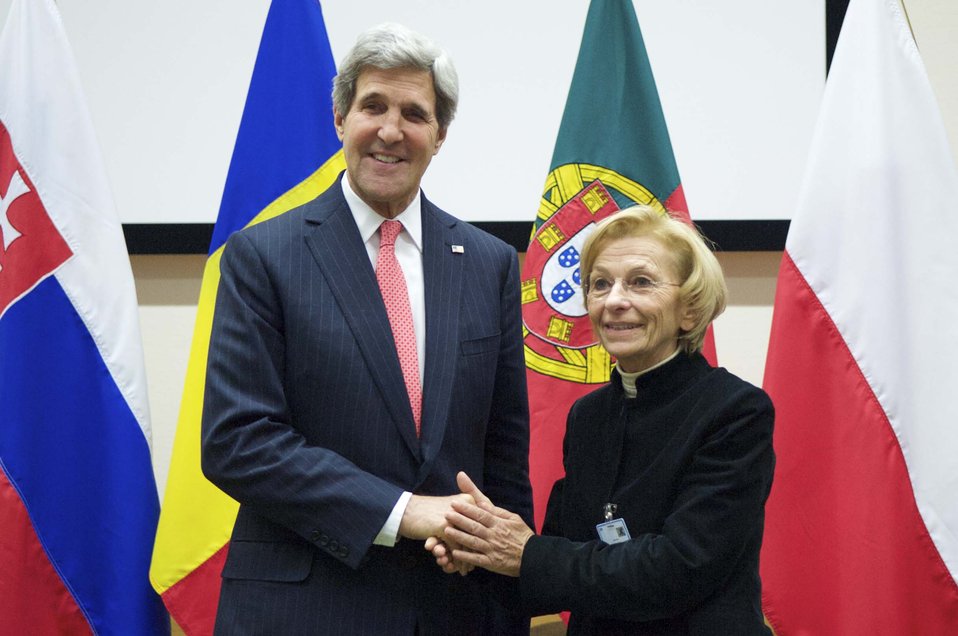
Secretary Kerry Meets With Italian Foreign Minister Bonino

U.S. Secretary of State John Kerry shakes hands with Italian Foreign Minister Emma Bonino before a bilateral discussion on the margins of a NATO Ministerial meeting in Brussels, Belgium, on December 3, 2013.